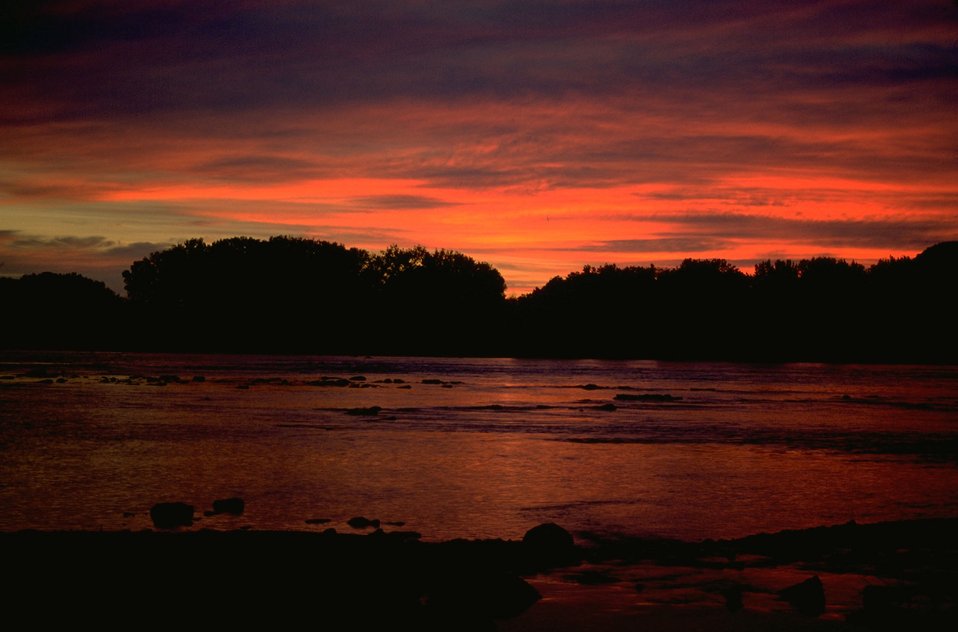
Sunset reflecting on the clouds and water